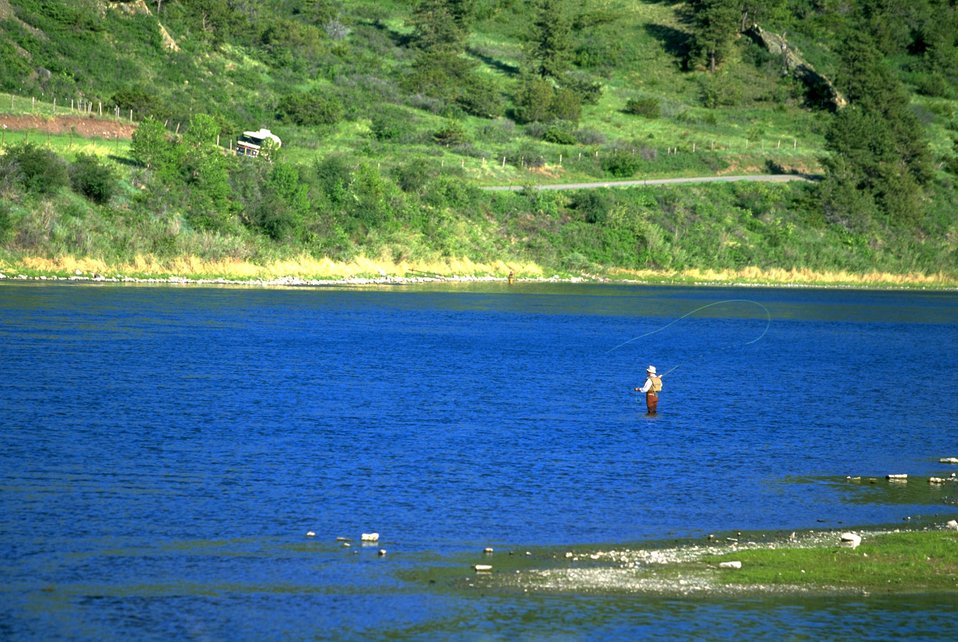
Fly fishing on the Missouri River